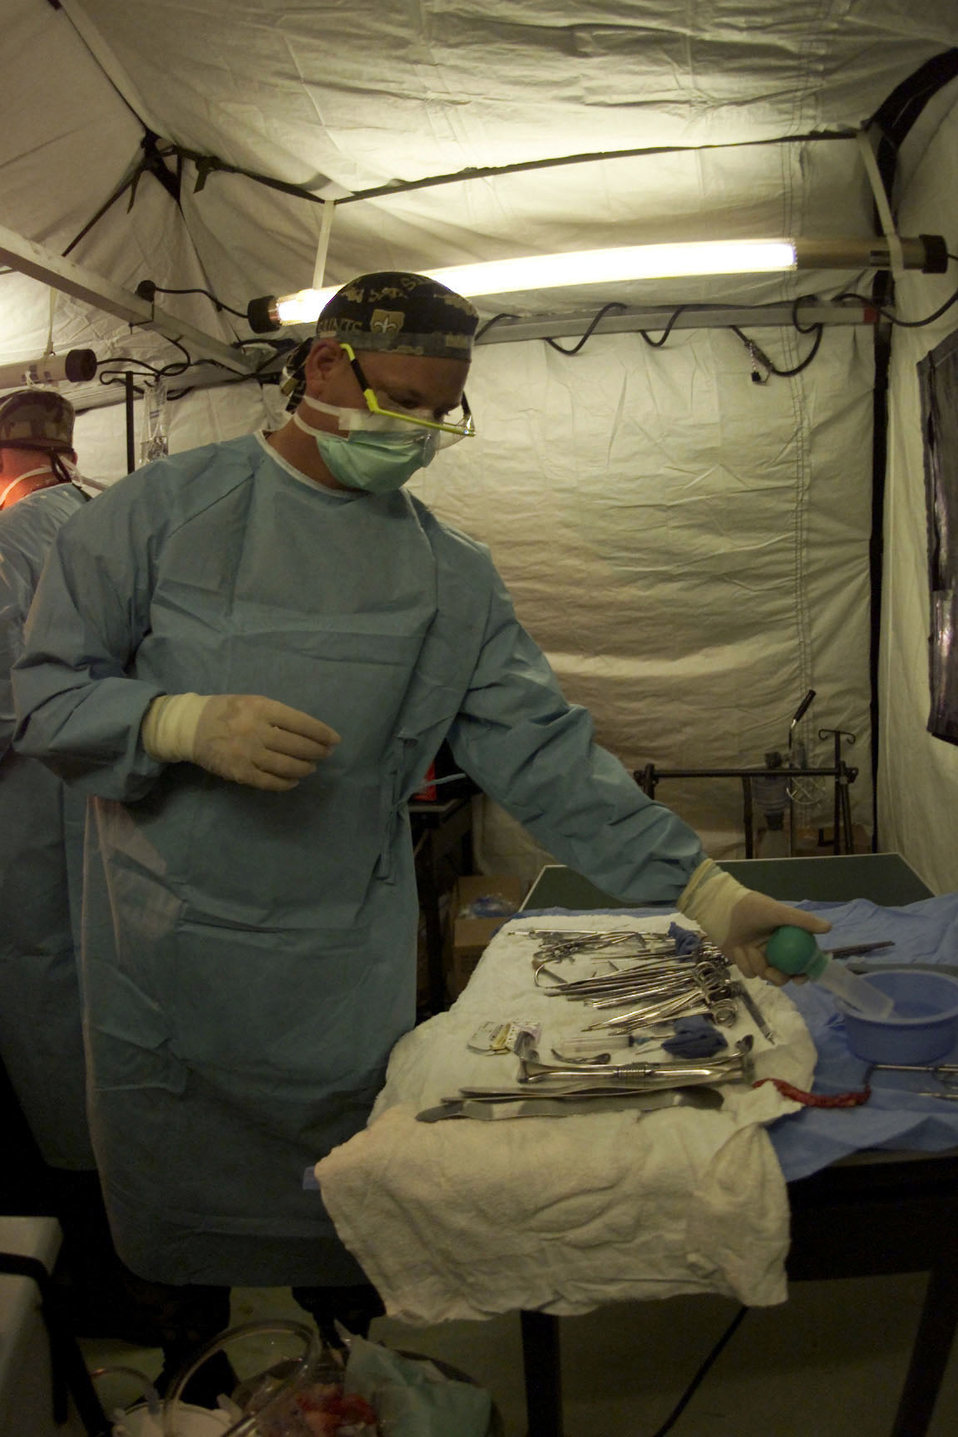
Smith

OPERATION ENDURING FREEDOM -– Staff Sgt. Chad Smith, a surgical technician, from the 81st Medical Surgical Squadron at Keesler Air Force Base, Miss., prepares saline for irrigation of a surgical wound while deployed in support of Operation Enduring Freedom.